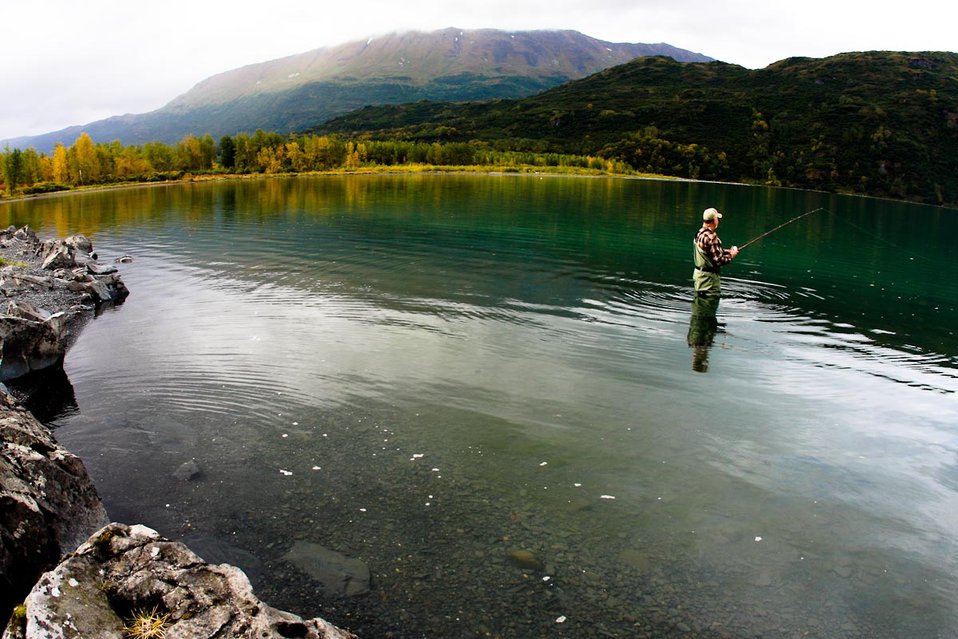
Visitor fishing in Uganik Lake

Lisa Hupp/USFWS
Source: Kodiak NWR